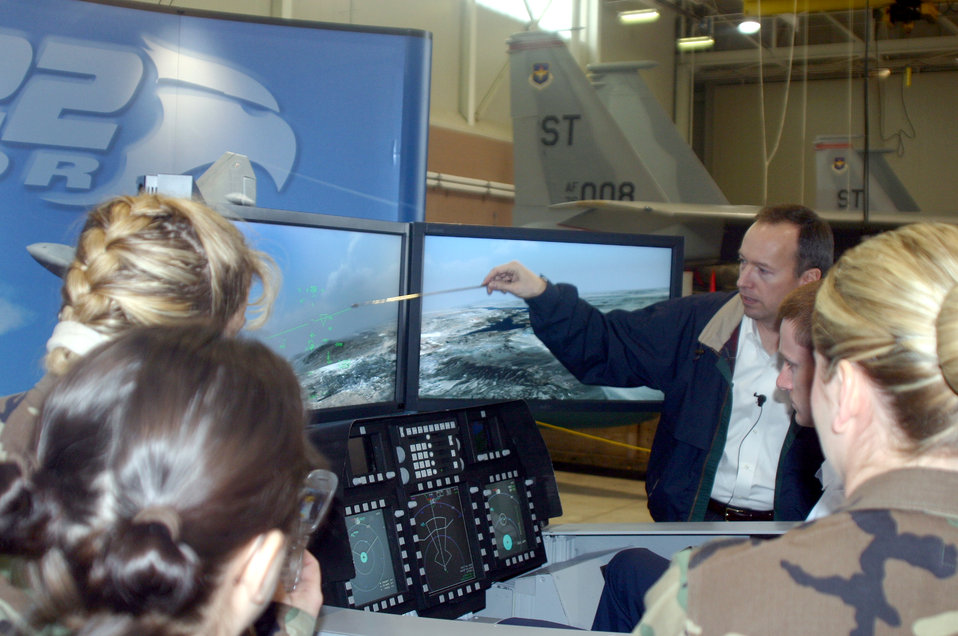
Sheppard Airmen check out Raptor simulator

SHEPPARD AIR FORCE BASE, Texas -- Contractor Rich Briggs explains some of the features of the heads-up display of the F/A-22 Raptor simulator to Airmen here. Contractors brought the demonstrator to give base Airmen a glimpse of the future of fighters in the Air Force.